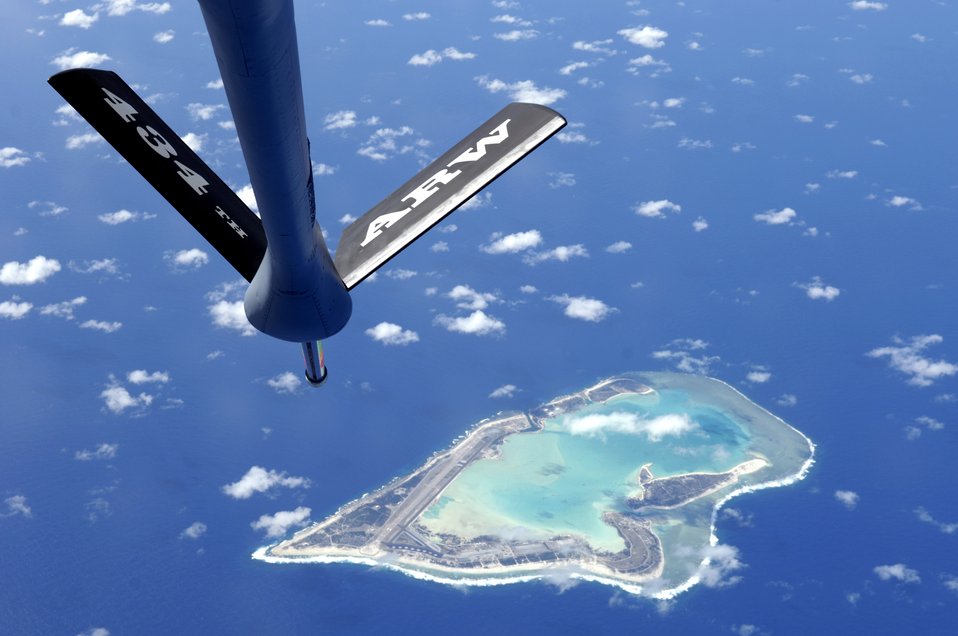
Fuel for the Pacific

The boom from a KC-135 Stratotanker is visible as the aircraft flies over Wake Island Dec. 15. The KC-135 is from the 434th Air Refueling Wing from Grissom Reserve Base, Ind.